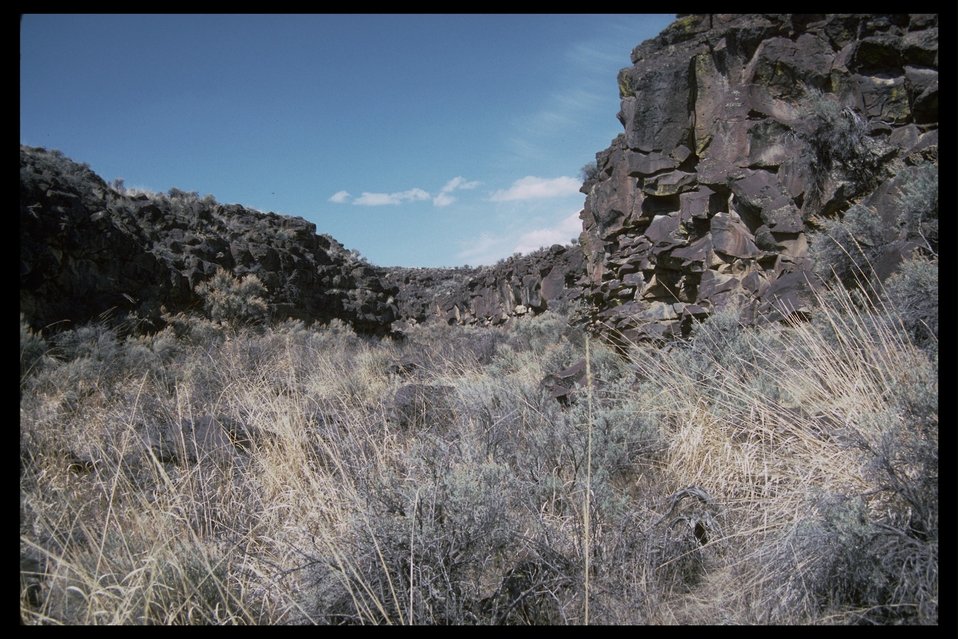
The upper portion of the dry Rincon canyon. (WSA 2-82)